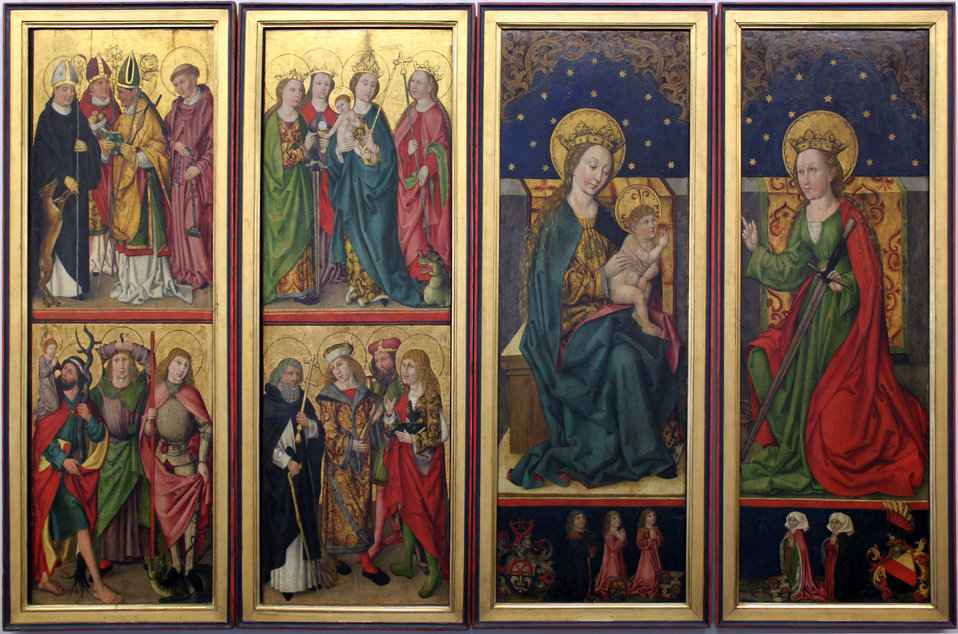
1493 Volckamer-Altar anagoria